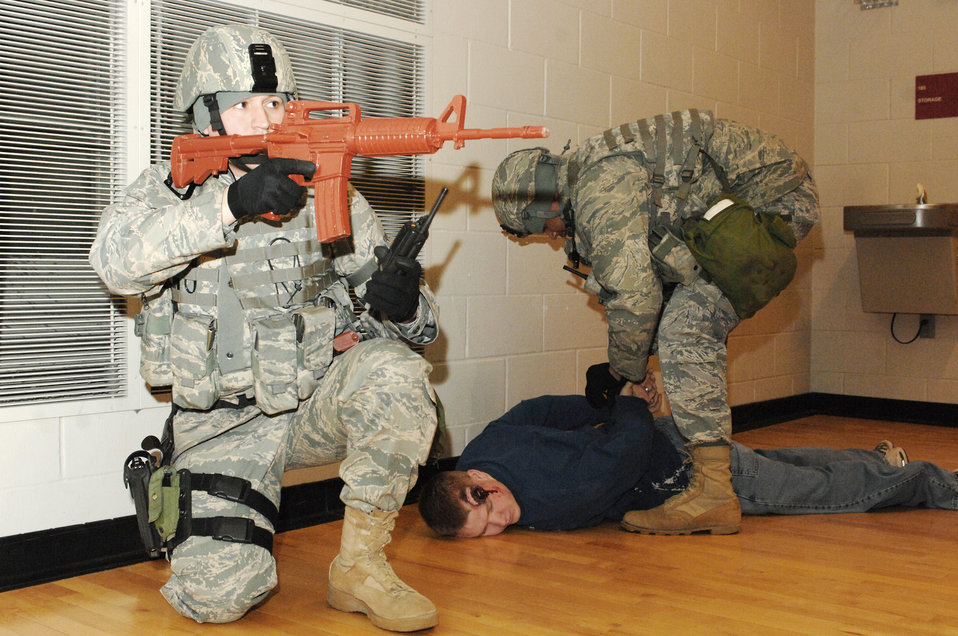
Shooter, sirens prep Minot Airmen

Staff Sgt. Jarrod Nelson provides security while another member of the team detains a possible shooter in the McAdoo Sports and Fitness Center during a major accident response exercise March 26, 2010, at Minot Air Force Base, N.D. The exercise prepared base members for possible real-world situations as well as testing communication and emergency procedures. Sergeant Nelson is a 5th Security Forces Squadron fire team leader.